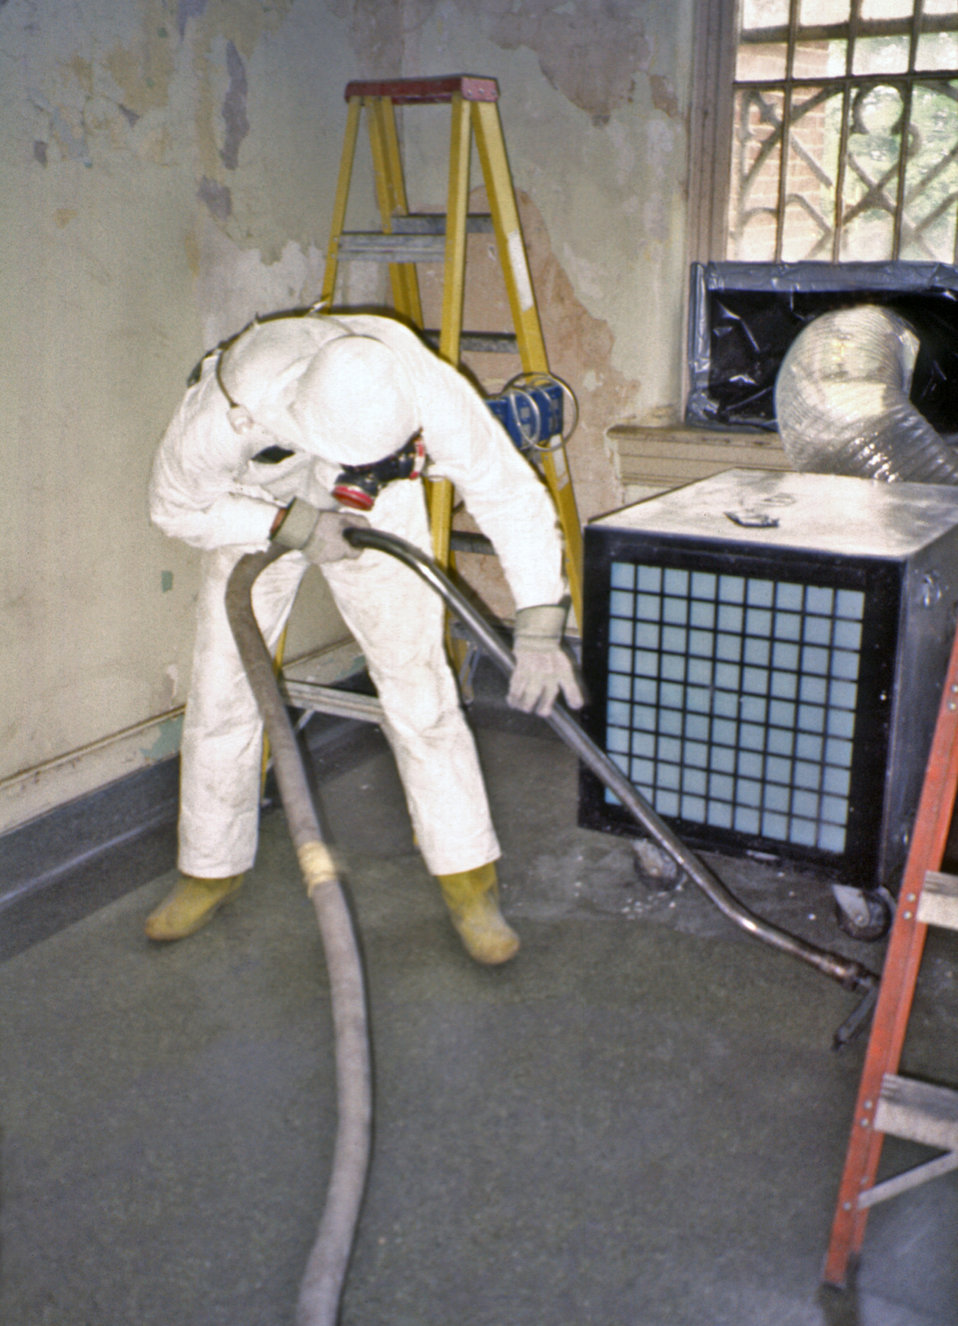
This 1991 photograph depicted a worker vacuuming lead-based paint debris with a high-efficiency vacuum equipped with a proper air filter able to remove lead particulates from the environment during a lead paint removal pilot project.